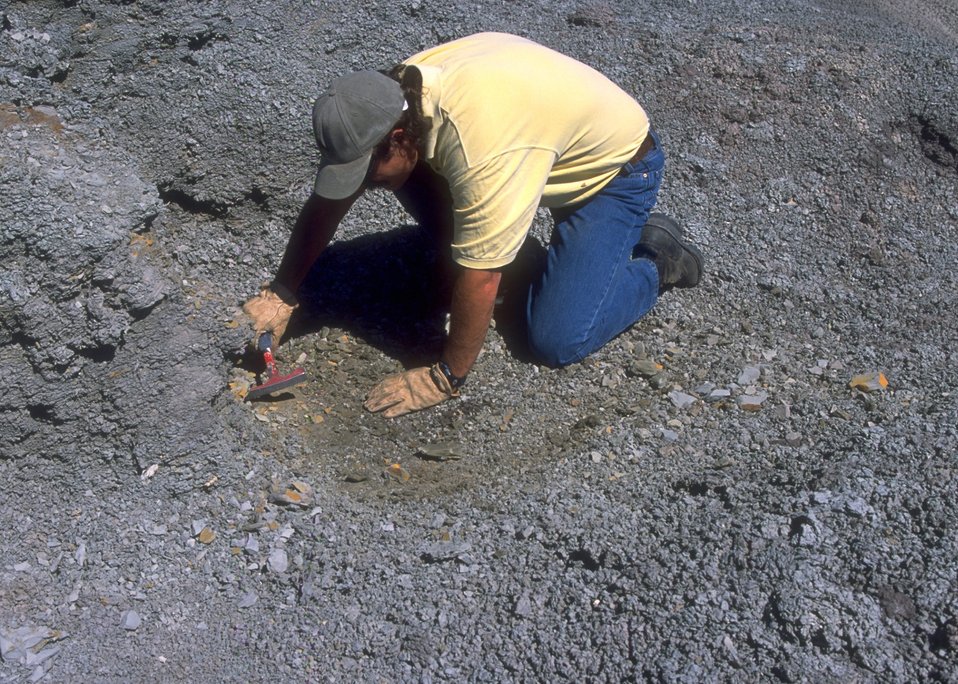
Dave Baker, WFO, examining fossils at the Cedar Ridge Paleo area, Lander Field Office.